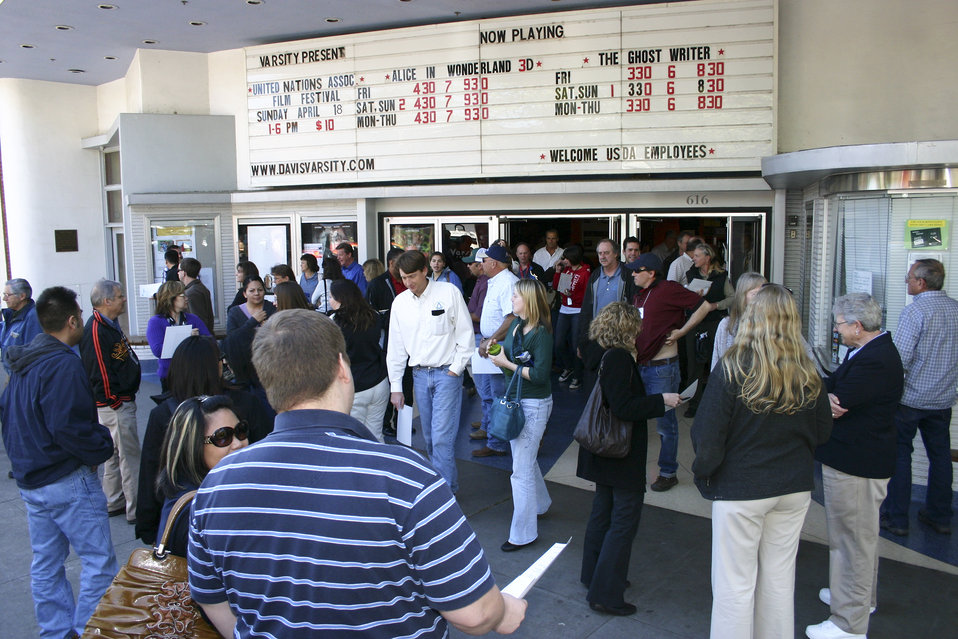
The U.S. Department of Agriculture (USDA) held the Cultural Transformation Employee listening sessions in Davis, CA, on Monday, April 12, 2010. USDA employees at the Varsity Theatre expressed their concerns with issues at the Department and made suggestions for correcting them and improving the image of USDA. USDA photo 10di1298-055.